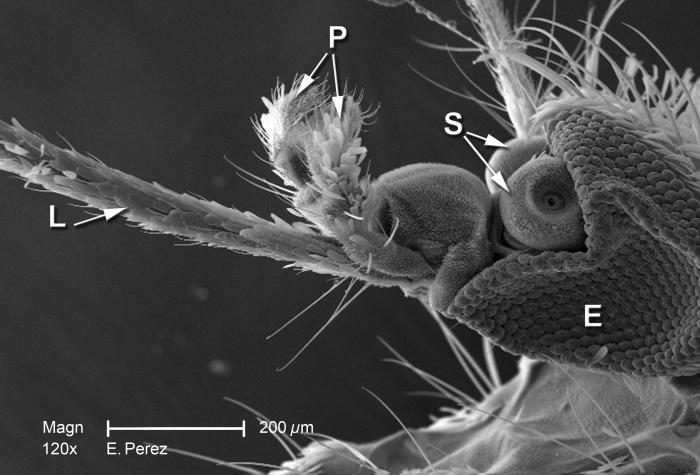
Magnified 250X, this scanning electron micrograph (SEM) is the second of three SEMs (see PHIL 10560, 10562) that are viewed under successively greater magnifications, while focusing on the cephalic, or head region of an unidentified mosquito discovered deceased in the Decatur, Georgia suburbs.